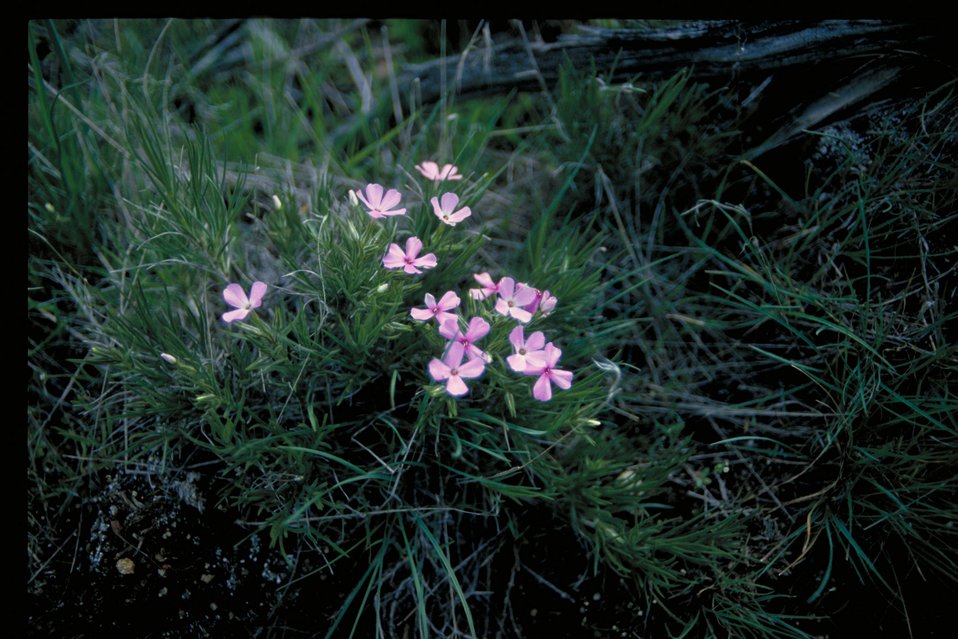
Wildflowers Boise Front Four Rivers Field Office LSRD Lower Snake River District